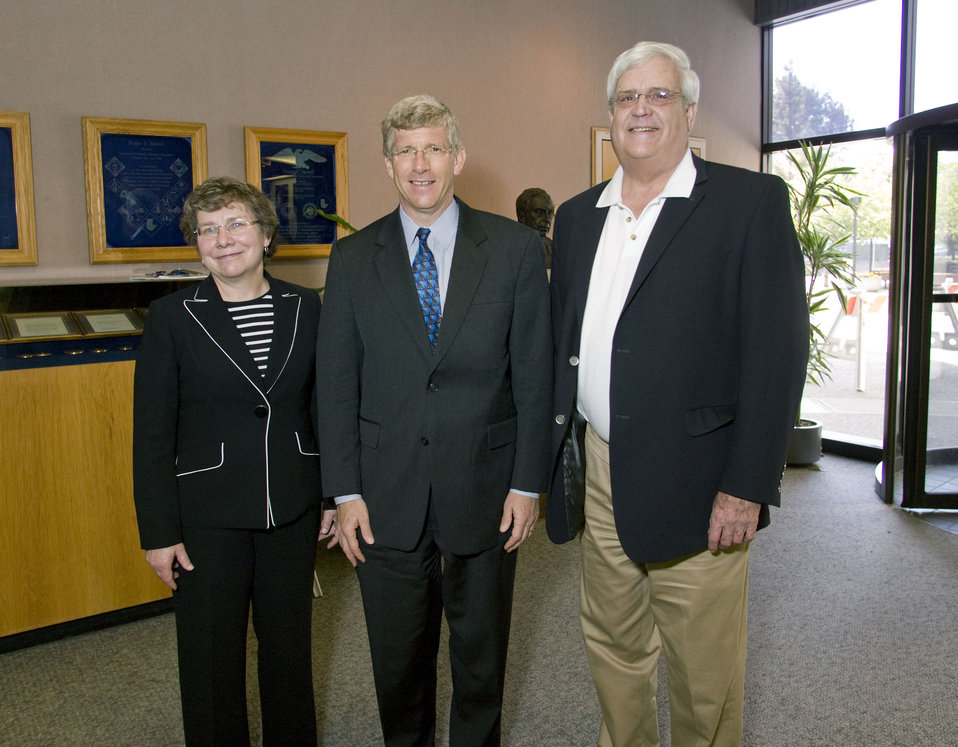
Poneman 01

Deputy Secretary of Energy Daniel Poneman, center, visits LLNL. Left is Alice Williams, LSO manager and George Miller, LLNL Director.